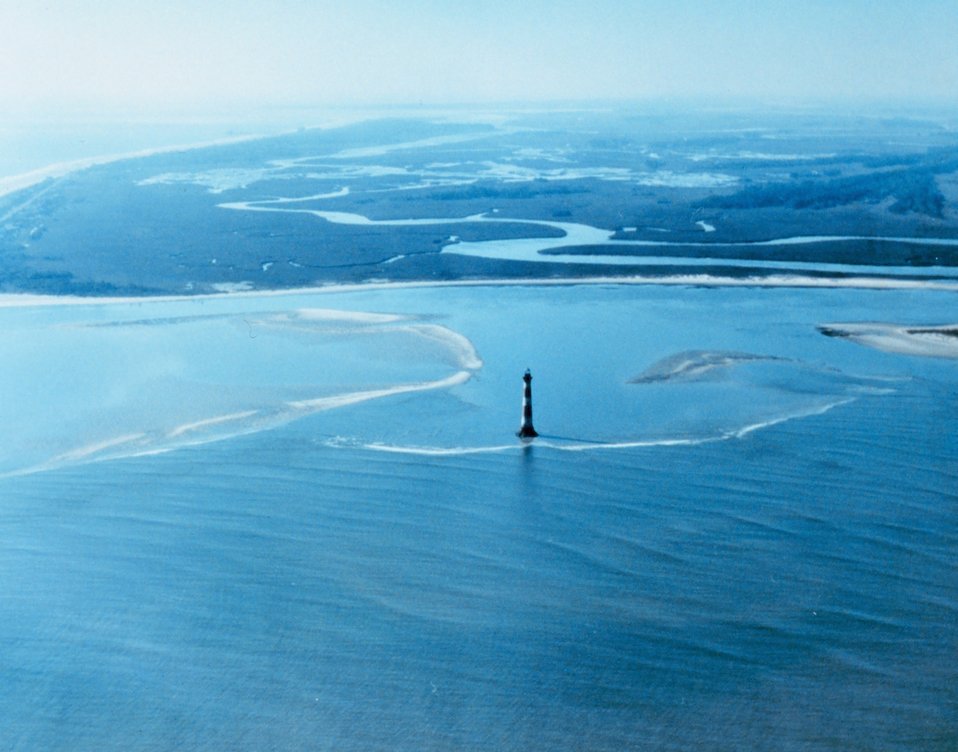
3246 North Latitude 7955 West Longitude.